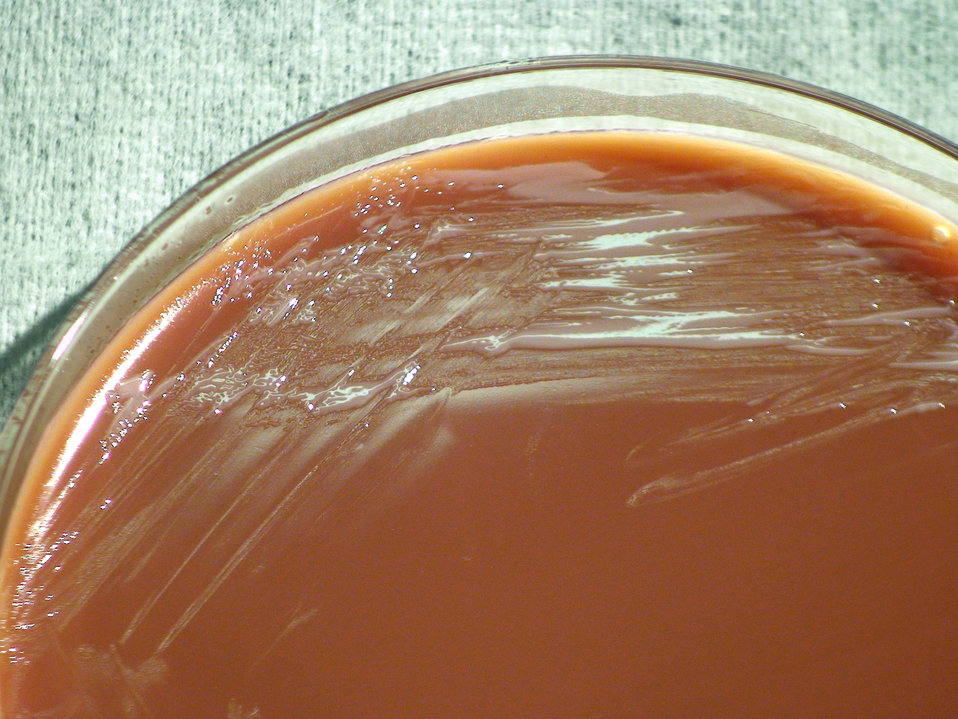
As a closer view of PHIL 12476, this photograph depicts the colonial morphology displayed by Gram-negative Brucella suis bacteria, which was grown on a medium of chocolate agar, for a 48 hour time period, at a temperature of 37�C. See PHIL 12475, for a view of these bacteria grown on the same medium and temperature, but for half the time period (24hr). Also note PHIL 12478 and 12479, again depicting B. suis organisms, which were grown on both the same medium and temperature, but for a greater time period (72hr). Brucella spp. bacteria are pathogenic towards humans, and cause a disease known as brucellosis.